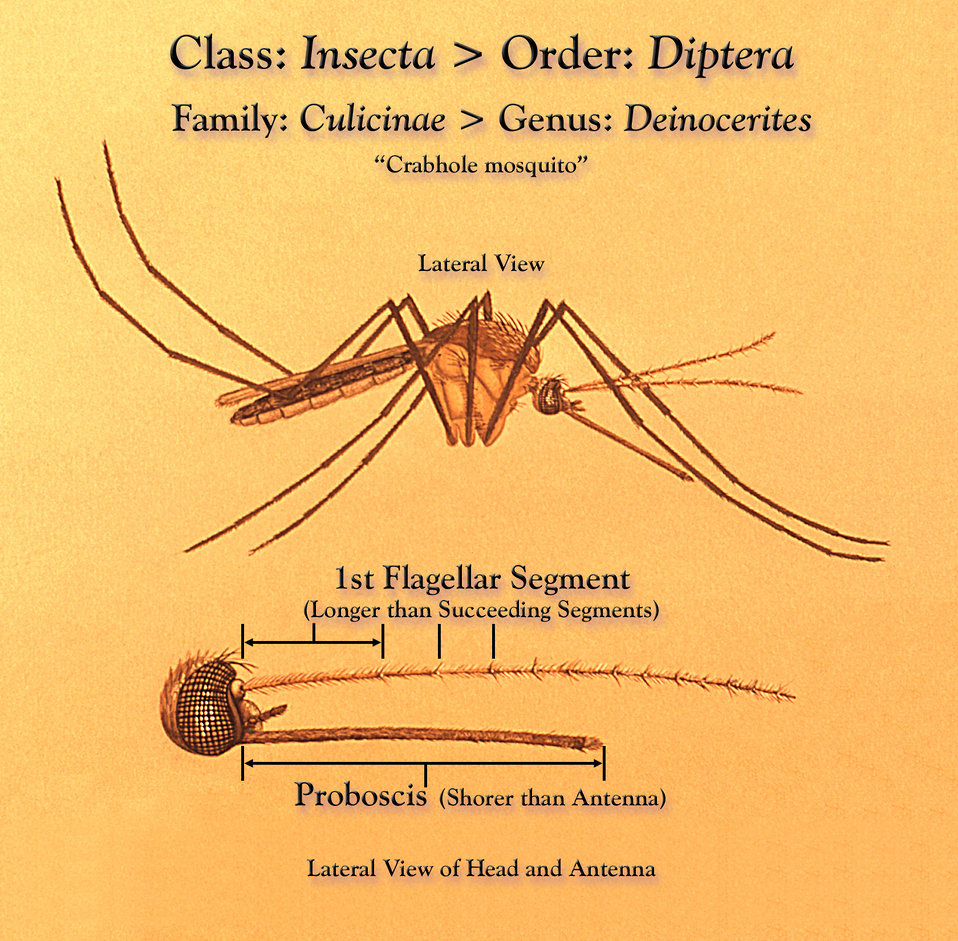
This illustration depicts a Deinocerites sp., 'Crabhole mosquito' from a lateral view, and an inset of its head region revealing the morphologic details of its antennae.